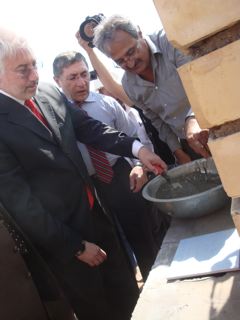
PRT Karbala Team Leader John Kincannon Celebrates Ground Breakings of Schools

PRT Karbala Team Leader John Kincannon participates in Brick and Mortar Ceremony to celebrate the ground breaking of two new schools in Karbala Province, Iraq, October 14, 2009.